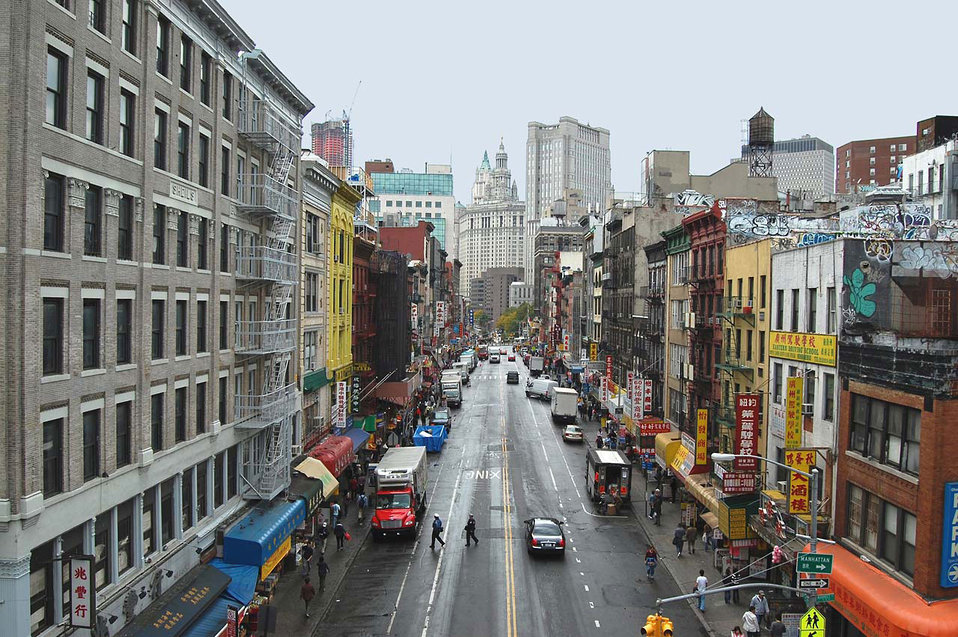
China town in new york.